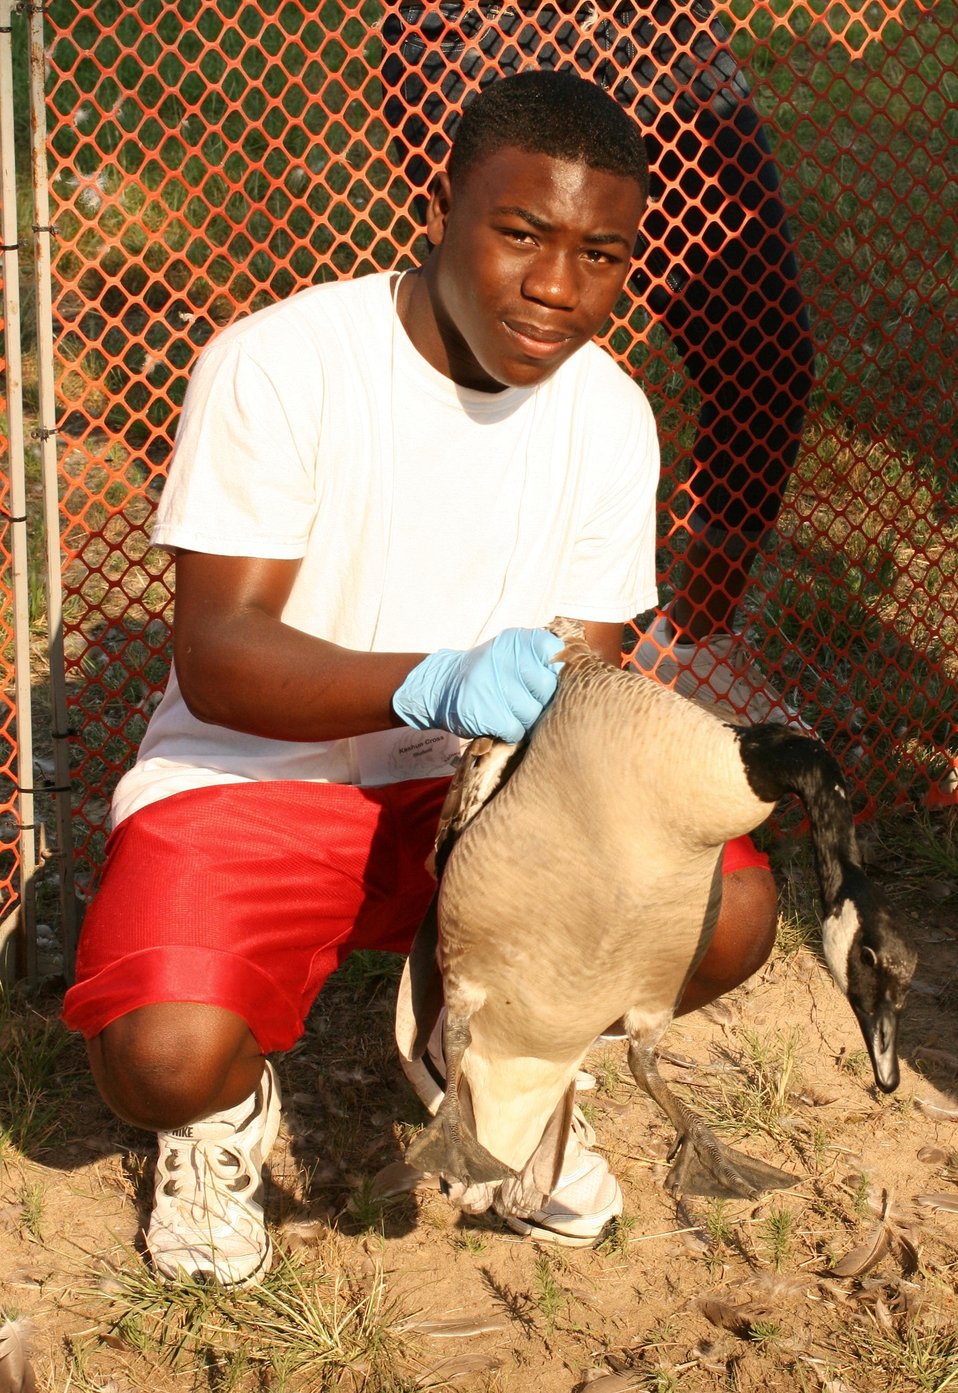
Students registered in the U.S. Department of Agriculture’s (USDA) Animal and Plant Health Inspection Service (APHIS) Ag-Discovery at the University of Arkansas Pine Bluffs, AR assist in capturing resident Canada Geese near the university in a session led by USDA’s Wildlife Services and personnel from the Arkansas Game and Fish Commission on July 30, 2012. The geese are corralled and students observe sample collection techniques for disease surveillance and assist in banding the birds before release.